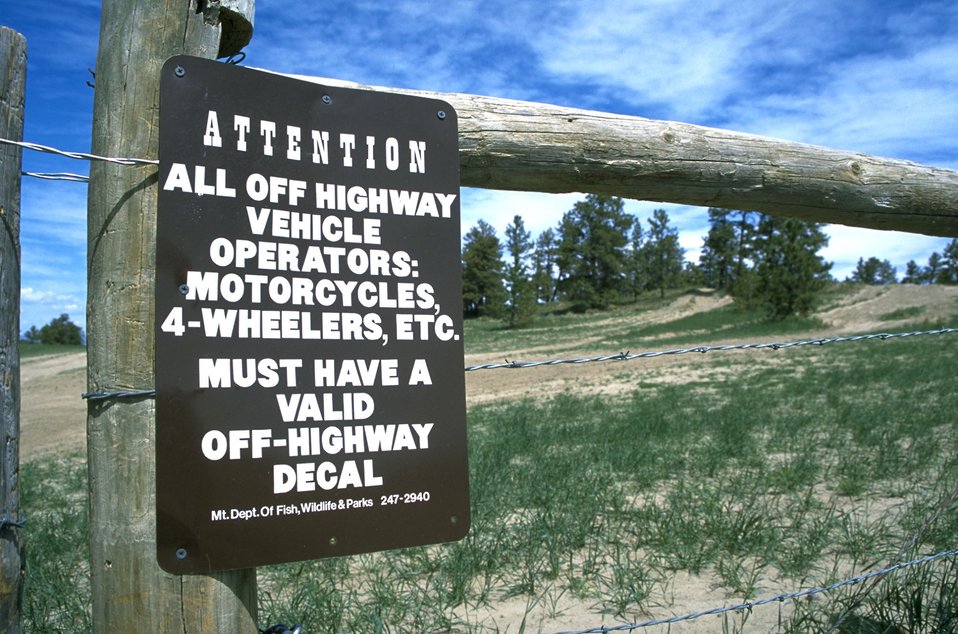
Regulation sign at the entrance to Area 1 in the Shepherd Recreation Area. Sign was placed by the Montana Fish, Wildlife and Parks